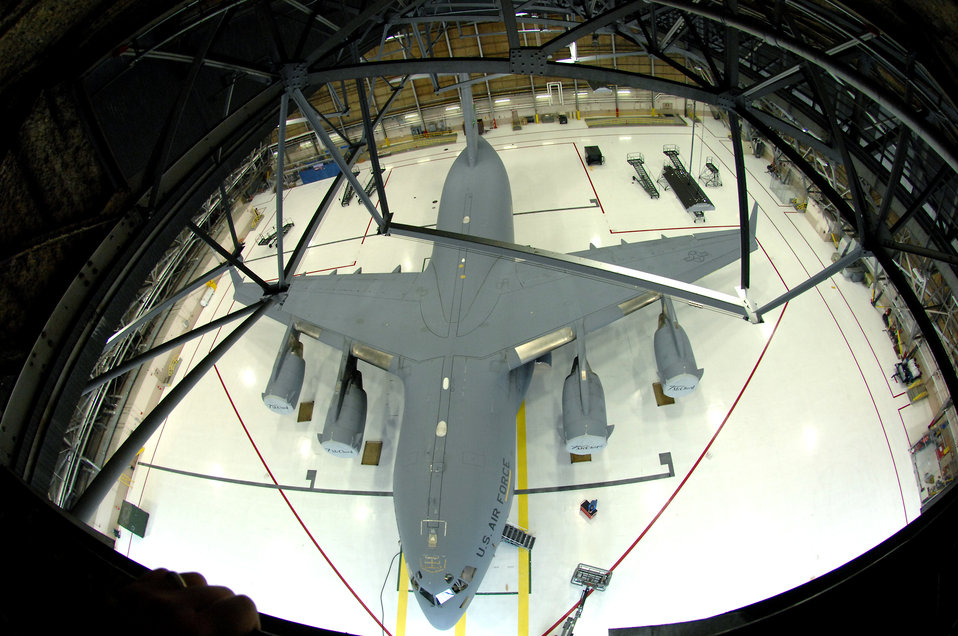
Glimmering Globemaster IIIs

A C-17 Globemaster III sits in Hangar 3 after being pressure washed during a routine home station inspection Jan. 29 at McChord Air Force Base, Wash. Regular aircraft cleaning enhances the aircraft's aerodynamic efficiency and overall appearance.